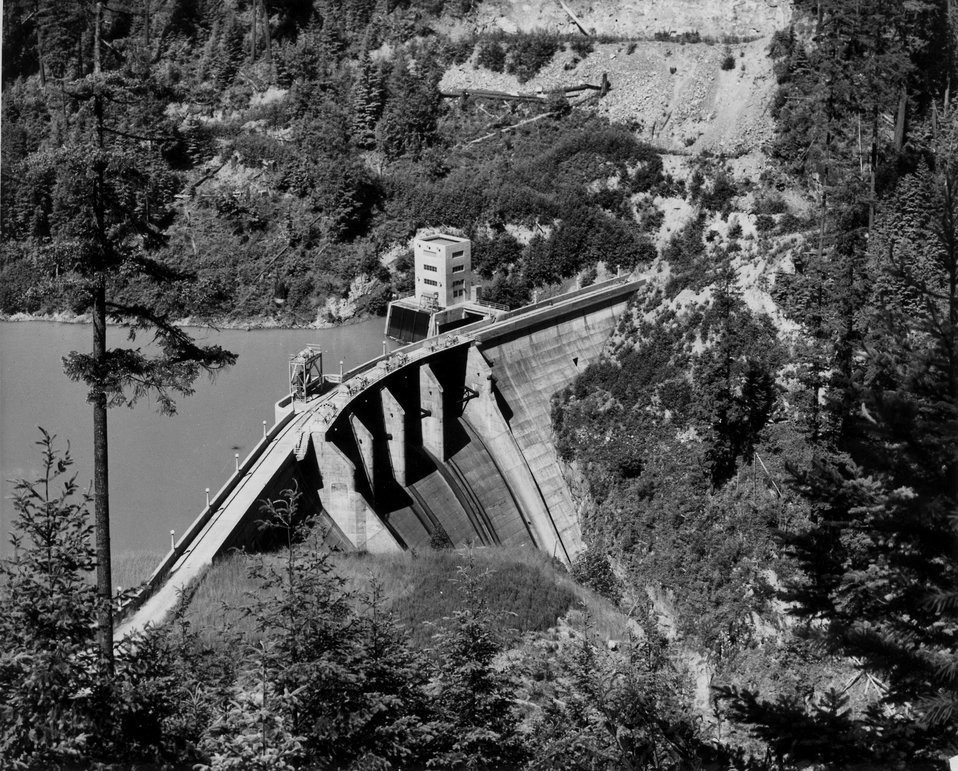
La Grande, Takoma, Washington. c. undated